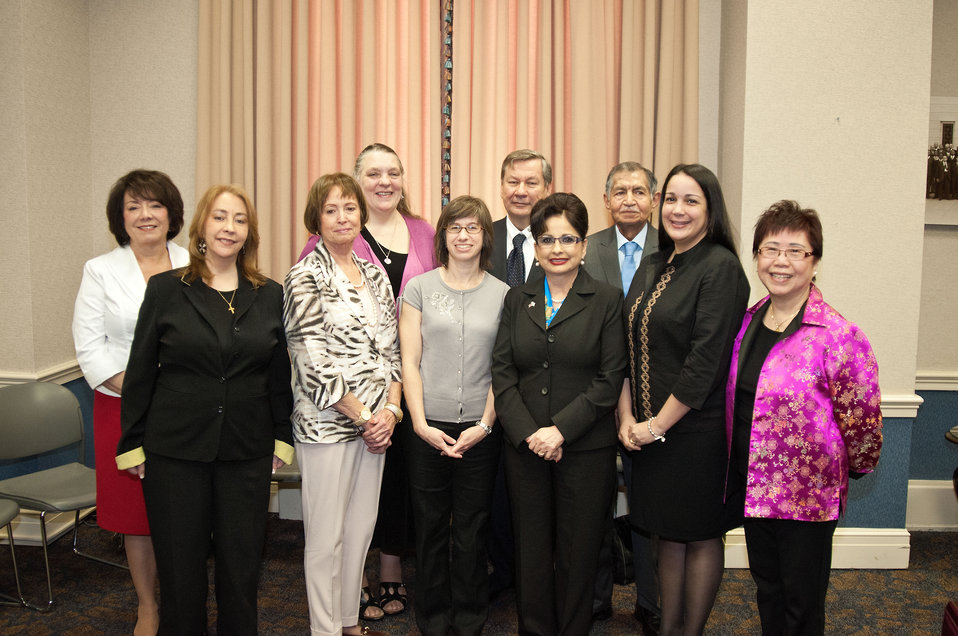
The 2012 White House Champions of Change were recognized for living out Cesar Chavez values of leadership, community service and service to others at a breakfast reception held in honor of Cesar Chavez Day sponsored by the Office of Advocacy and Outreach and Office of the Assistant Secretary for Civil Rights at the U.S. Department of Department of Agriculture in Washington, D.C. on Thursday, March 29, 2012. Cesar Chavez was a Mexican-American labor leader who used non-violent methods to fight for the rights of migrant farm workers in the southwestern United States. Chavez founded the Cesar Chavez Foundation, a group that advocates for the rights of farm workers, acting to increase wages and improve the working conditions and safety of farm workers. (Back L to R Escuela Katelolco teacher in Denver, CO Nita Gonzales, Cornell University, Cornell Farmworker Program Director in Ithaca, NY Mary Jo Dudley, Florida Legal Services representative in Tallahassee, FL Robert Williams, and United Farm Workers of America representative in Salinas, CA Rogelio Loan. Front row L to R Progressive Leadership Alliance representative in Reno, NV Elvira Diaz, Tierra del Sol Housing Corporation representative in Las Cruces, NM Rose Garcia, Student Action with Farm Workers representative in Durham, NC Melinda Wiggins, National Hispanic Christian Leadership Conference in Sacramento, CA Rev. Eve Nunez, Spanish Language Department Kipp High School Director, Philadelphia, PA Nancy Cubano, and President, Chinese American Service League, Inc.in Sacramento, CA “Bernie” Lo Wong,).